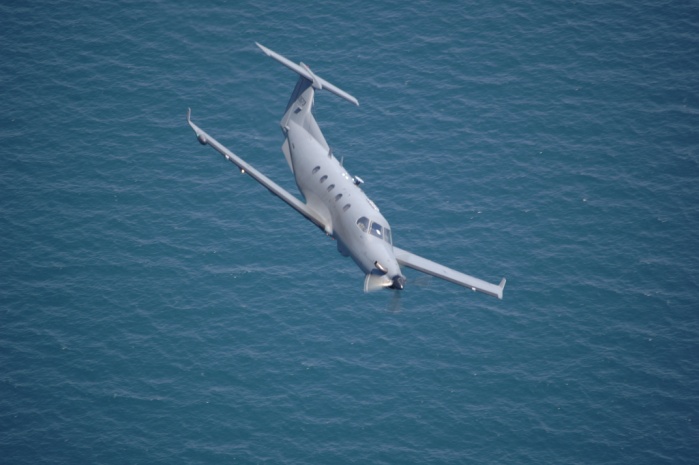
U-28A

The U-28A provides a manned fixed wing, on-call/surge capability for Improved Tactical Airborne Intelligence, Surveillance, and Reconnaissance in support of Special Operations Forces.